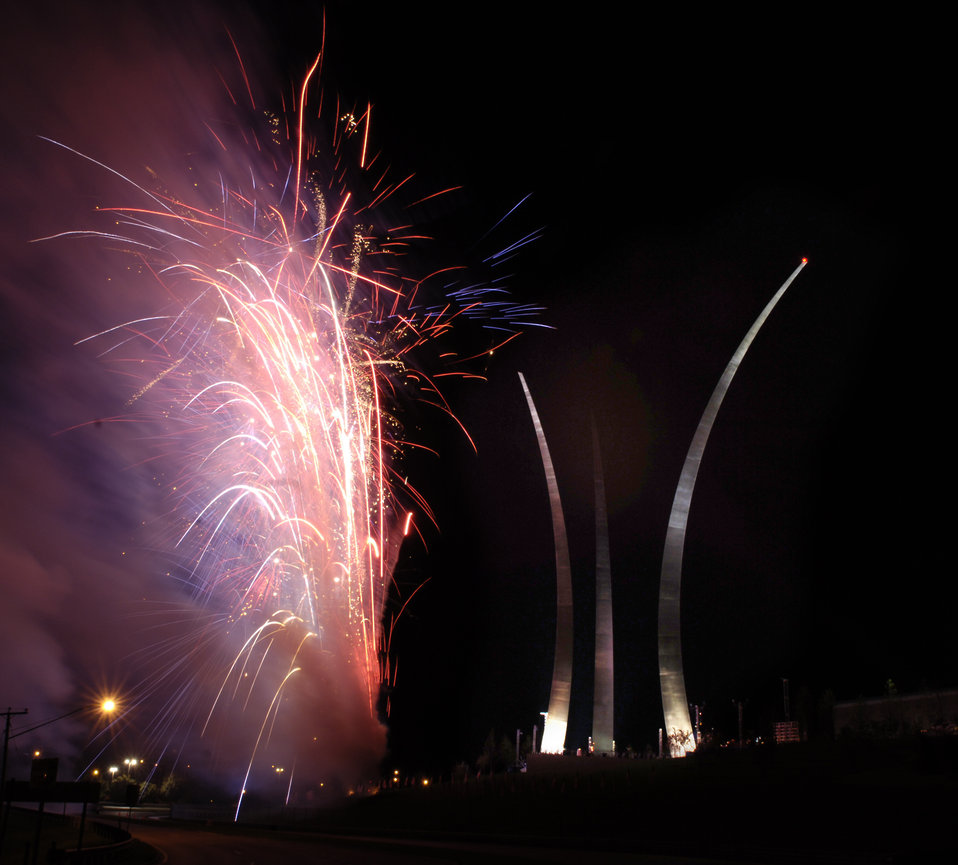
Fireworks light the night sky at memorial dedication event

Fireworks light up the Air Force Memorial Oct. 13 at Arlington, Va., on the eve of its official dedication ceremony. President George W. Bush will join senior Defense Department and Air Force officials in a ceremony to present the memorial to the nation today. Designed by the late James Ingo Freed, the memorial with its three soaring spires inspired by the U.S. Air Force Thunderbirds bomb burst maneuver, pays tribute to and honors the men and women of the U.S. Air Force and its predecessor organizations.